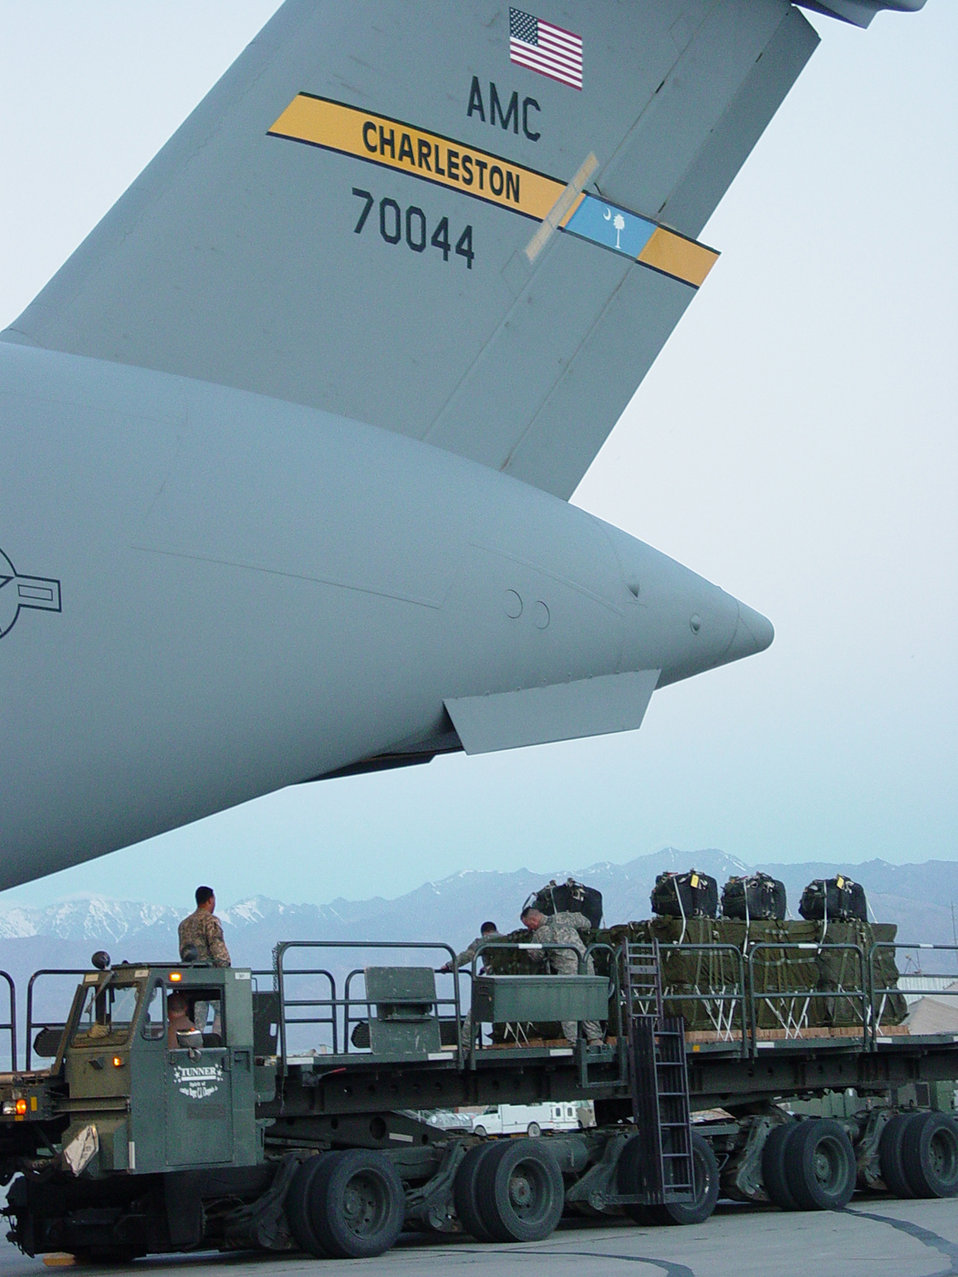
C-17 employs 'screamer' in combat airdrop

A C-17A Globemaster III from Charleston Air Force Base, S.C., is loaded with Container Delivery System bundles prior to an airdrop mission over Afghanistan May 24. The mission marked the first C-17 combat employment of the Joint Precision Airdrop System in conjunction with the screamer Container Delivery System bundles.